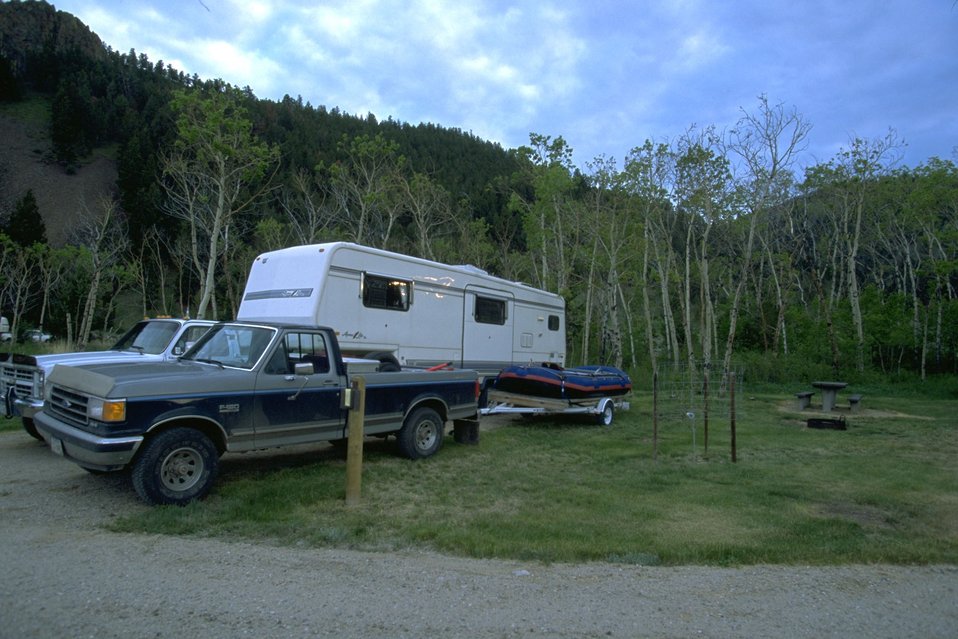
Visitors to Divide Campground